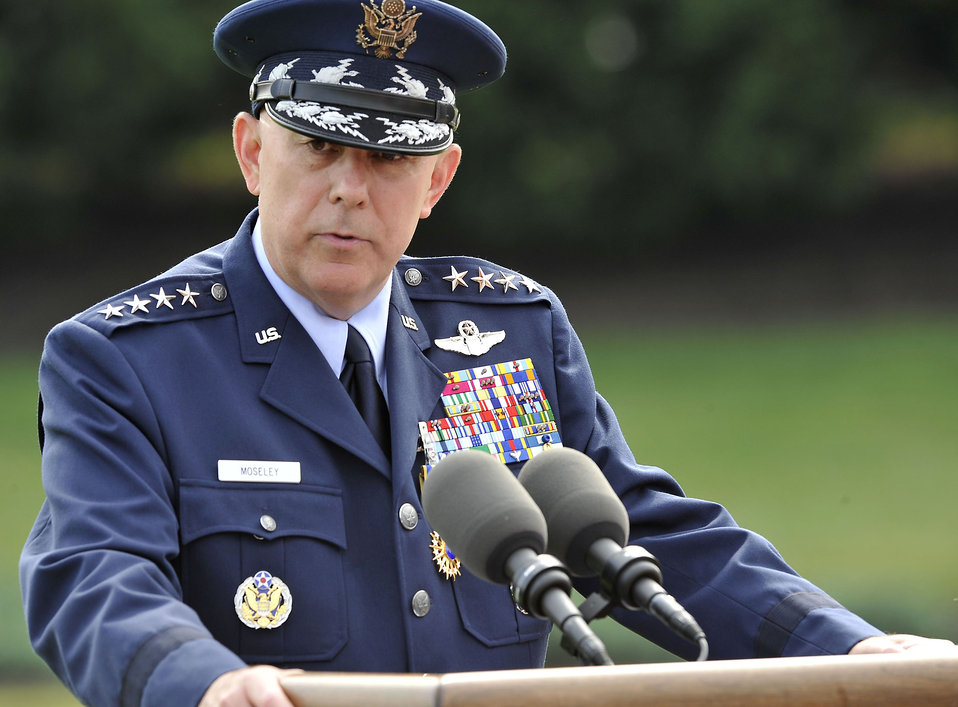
CSAF Retirement Ceremony

Air Force Chief of Staff Gen. T. Michael Moseley addresses the audience July 11 during his retirement ceremony at Bolling Air Force Base, D.C.